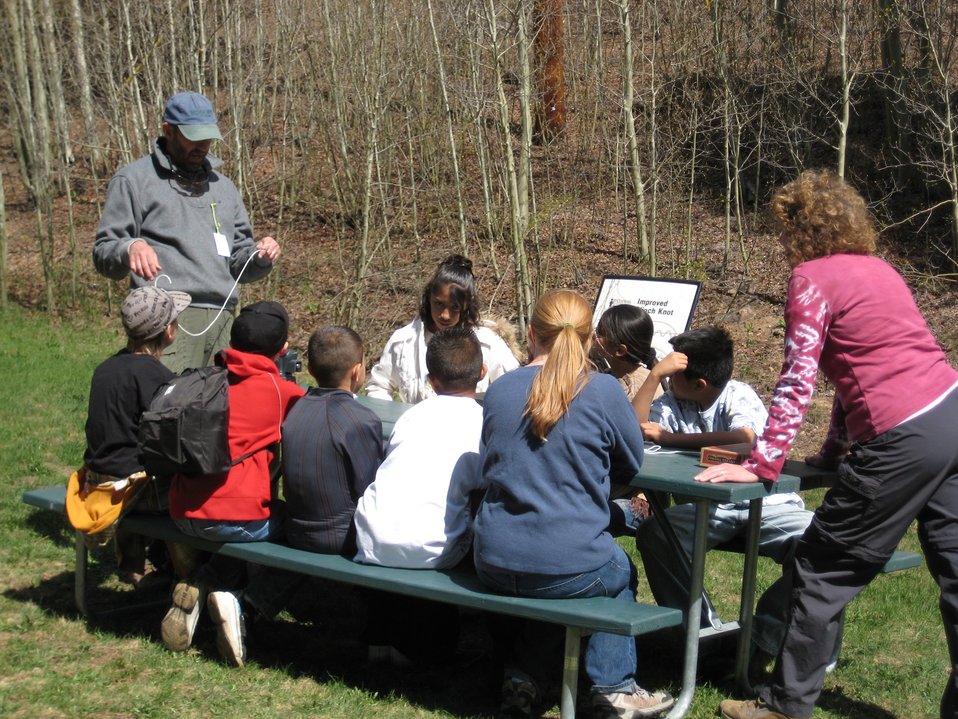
Pathways to Fishing Program

The annual Pathways to Fishing Program is held each year at the Leadville National Fish Hatchery. All the 5th grade classes in Lake County, CO come out to participate! The annual Pathways to Fishing is a 10-station program that teaches kids the skills needed to become successful fishermen.